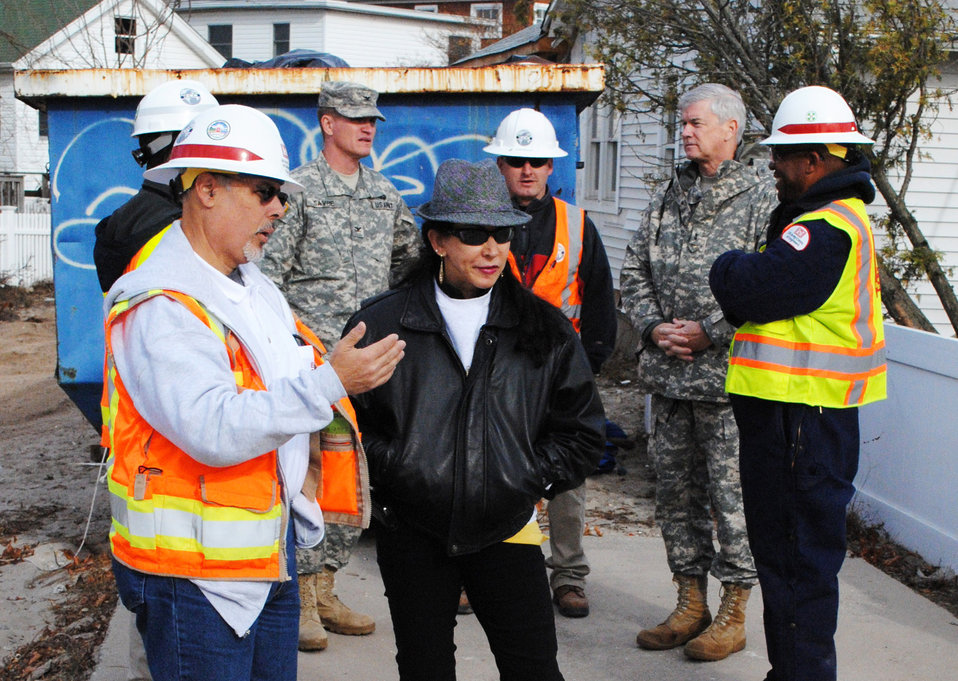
Fred Strickland helps with Sandy debris removal in New York

One of our deployed engineers, Fred Strickland (left,) speaks with Karen Durham-Aguilera, the Corps’ director of Contingency Operations and Office of Homeland Security, about the current debris mission at Breezy Point, N.Y., Nov. 20. Strickland, who’s been in New York for two weeks helping with the massive debris removal effort from Hurricane Sandy, is one of more than 150 Corps volunteers currently deployed.